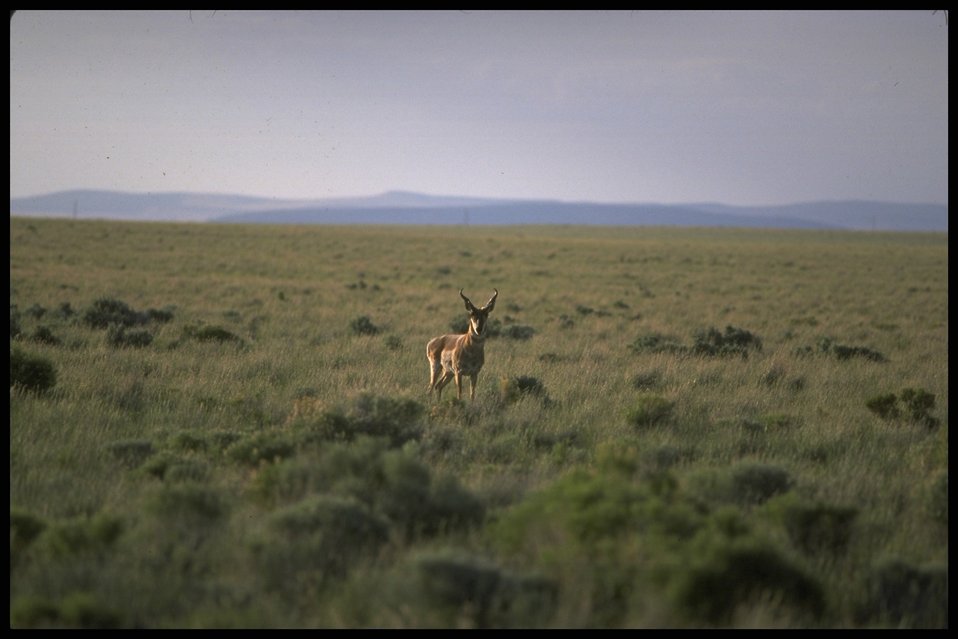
Far shot of antelope, Lakeview District.